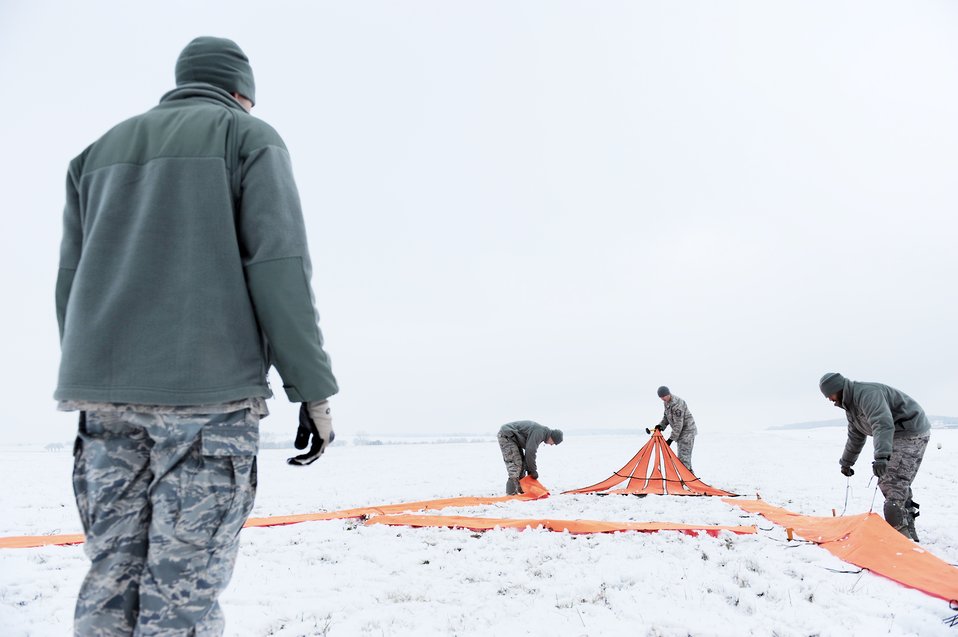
Ramstein forces practice air insertion

Tech. Sgt. Jason Shaffer spots as military members secure reflective panels before the arrival of a C-130J Hercules supporting an insertion mission at Bitburg Airport, Germany, Jan. 25, 2010. He is a jump master and drop-zone safety officer with the 435th Security Forces Squadron at Ramstein Air Base. The unit is setting up bare-base operations as part of the dual-wing operational readiness exercise with the 86th Airlift Wing in September.